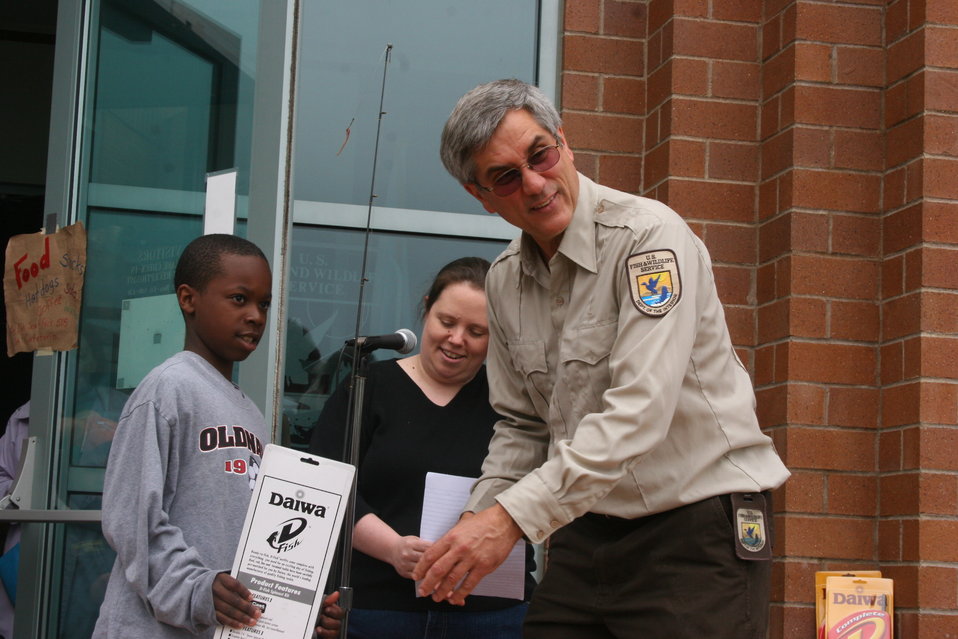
Winner

Fishing event at U.S. Fish and Wildlife Service Regional Office in Hadley, MA